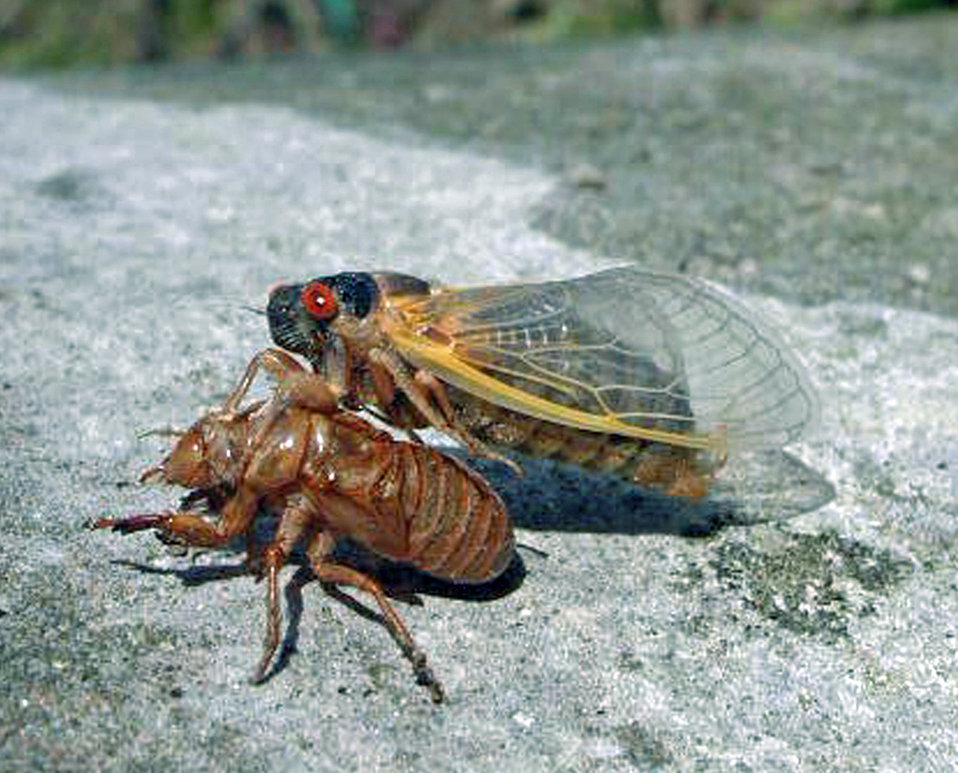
Cicada photo1a

An adult periodical cicada emerges from its 17-year nymph stage, molts and arises as a winged adult. This spring will see the return of the large, colorful, fly-like bugs with large eyes and tented wings.